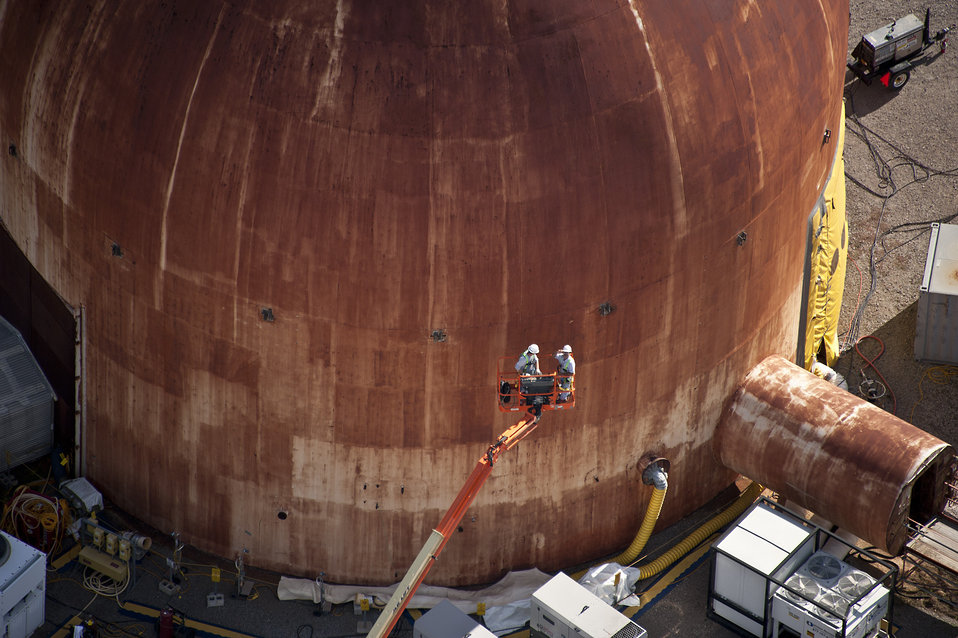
HWCTR Decommissioning

Work is under way to decommission the Heavy Water Components Test Reactor, which had been used to test experimental fuel assemblies for commercial heavy-water power reactors. SRS is scheduled to remove the dome of the reactor this month (January 2011). Workers also will displace the reactor vessel and steam generators, grout the remaining structure in place, and install a concrete cover over the reactor’s footprint.